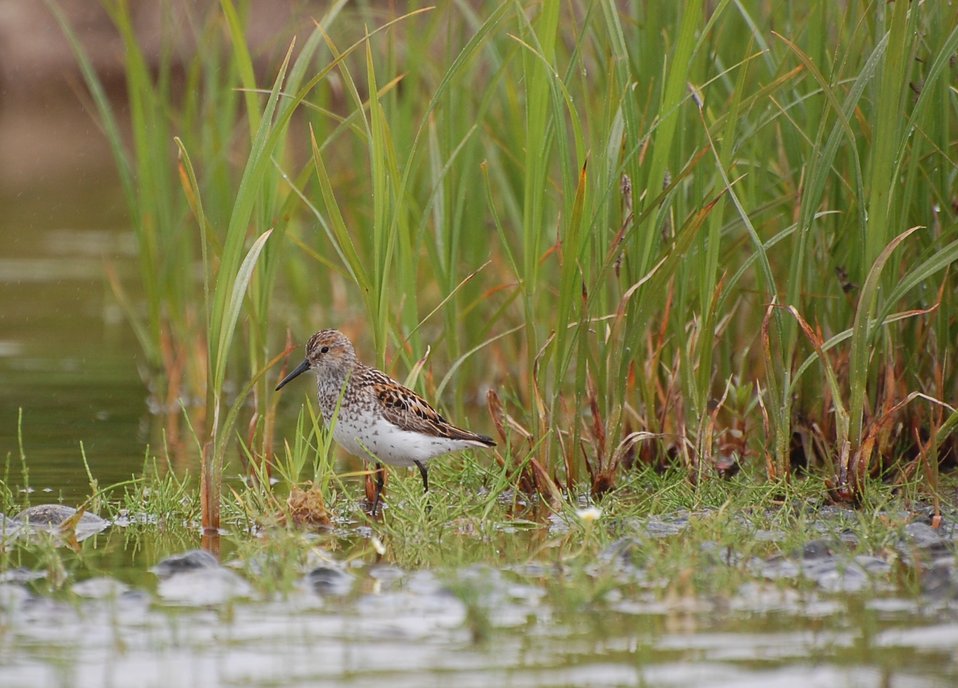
Western Sandpiper

Izembek National Wildlife Refuge
Photo by Kristine Sowl,
USFWS, Public Domain